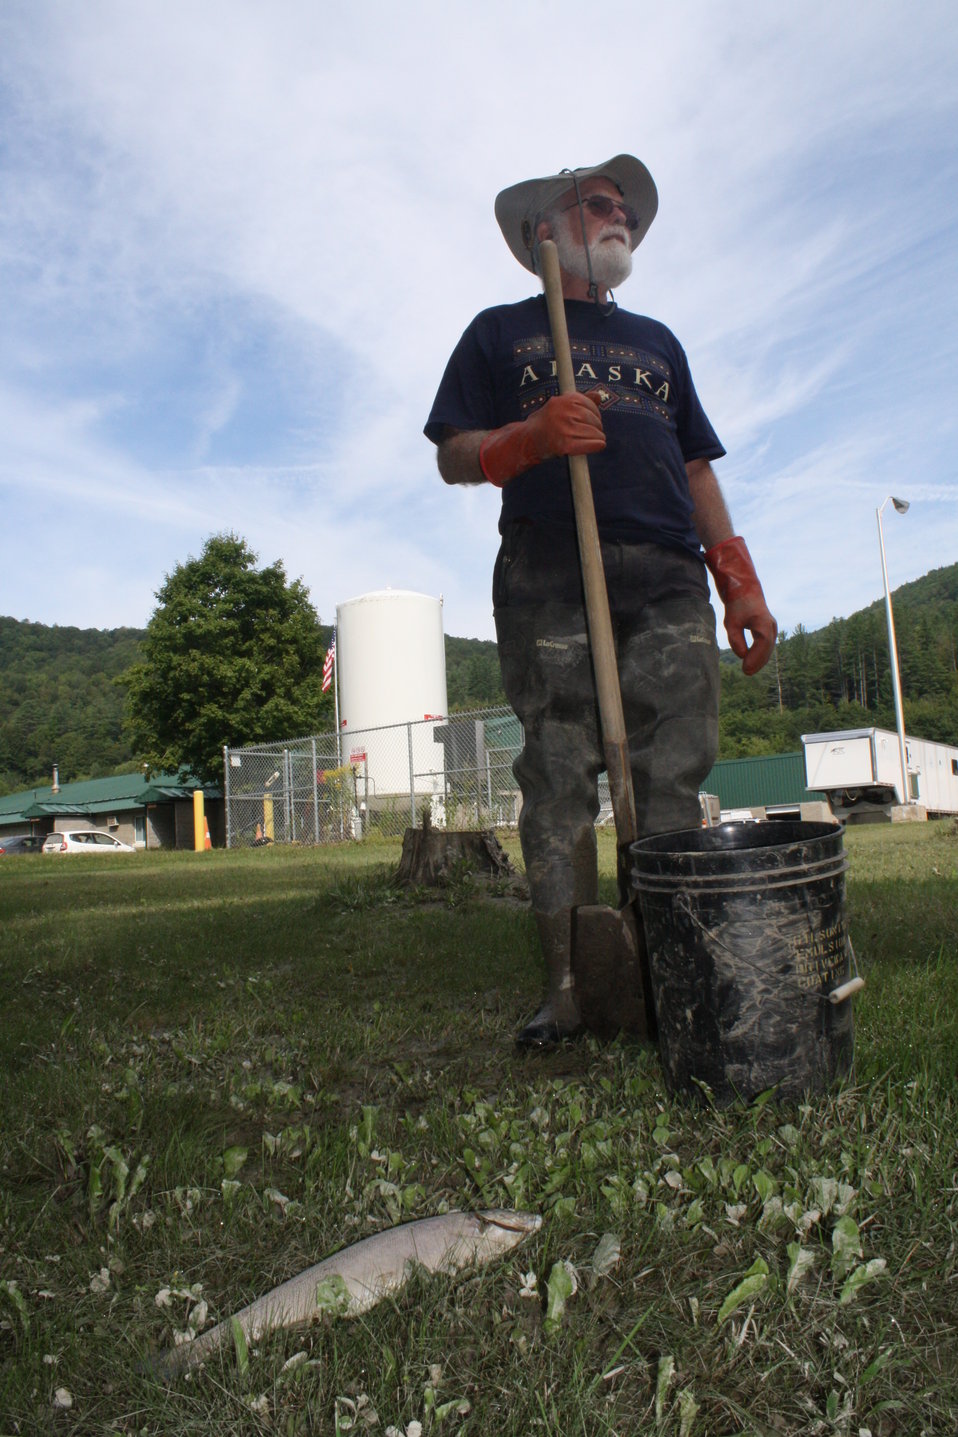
Volunteer cleaning up dead fish

White River National Fish Hatchery volunteer collects dead fish from Hatchery grounds.

High flood waters breached some circular fish rearing pools at White River National Fish Hatchery during Hurricane Irene. Some fish escaped, and were left stranded by receding flood waters.